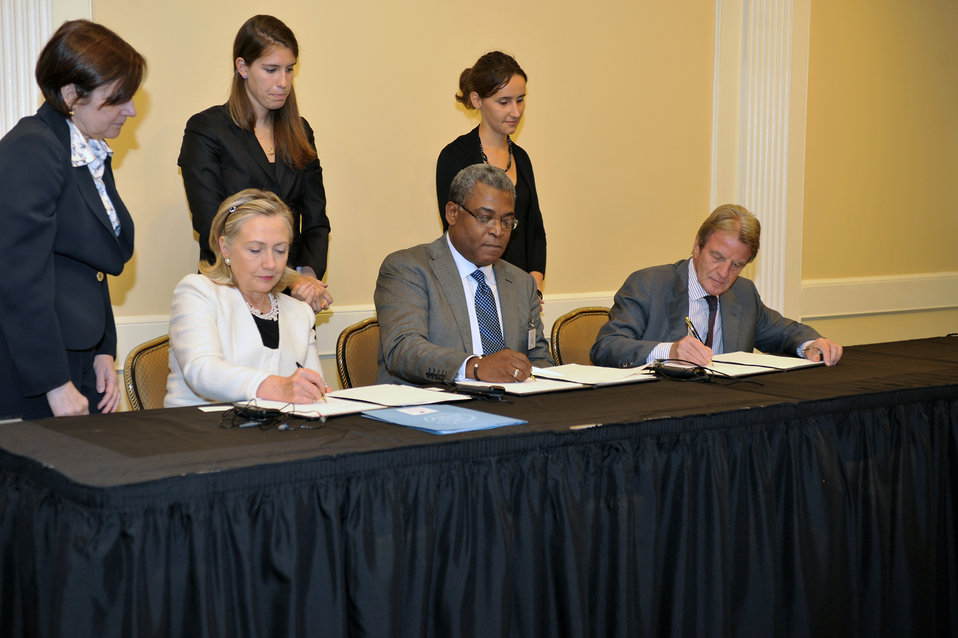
Secretary Clinton, Haitian Prime Minister Bellerive, and French Foreign Minister Kouchner Sign an MOU

U.S. Secretary of State Hillary Rodham Clinton (left), Haitian Prime Minister Jean-Max Bellerive (center), and French Foreign Minister Bernard Kouchner (right) sign an MOU committing to cooperate with the Government of Haiti in the reconstruction and expansion of the Hopital Universitaire d’Etat d’Haiti at the InterContinental Hotel in New York, New York, on September 20, 2010.